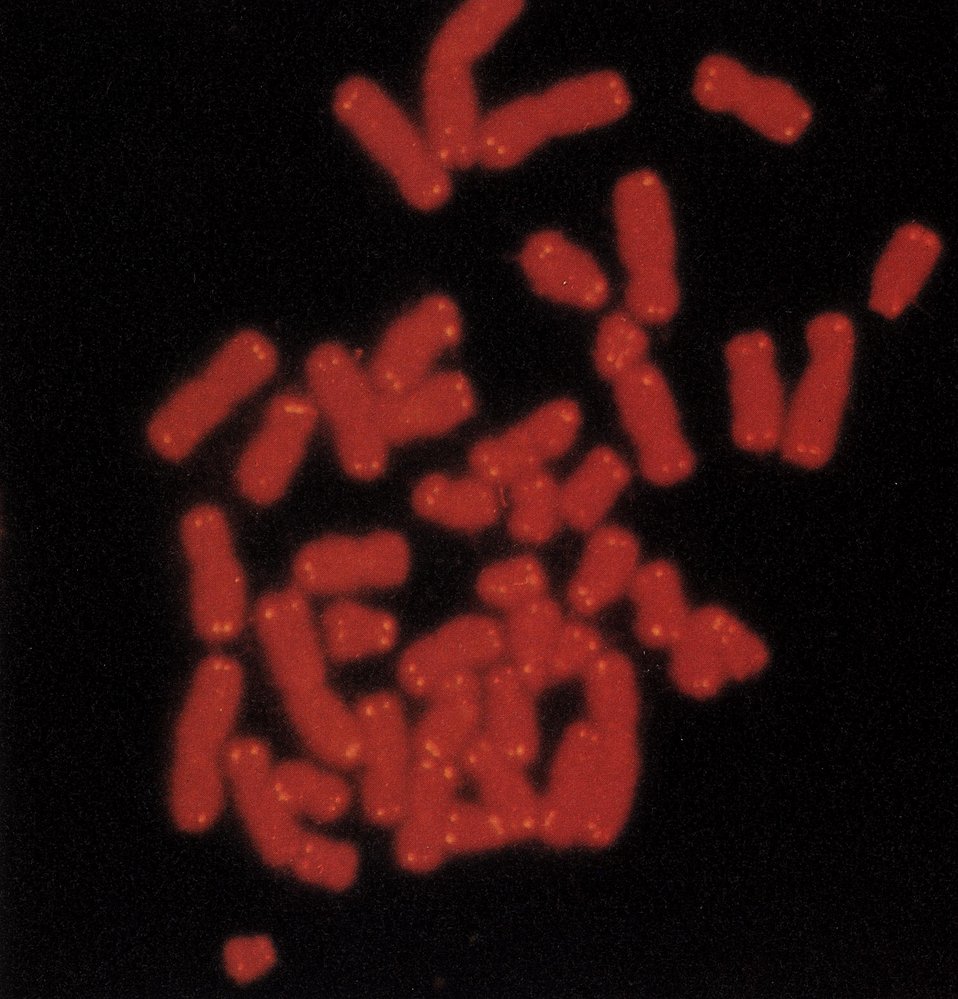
Identification and cloning of the human telomere to define the ends of the human genetic and physical maps. Telomeres are defined as the ends of chromosomes. The specialized structures are involved in the replication and stability of linear DNA molecules.